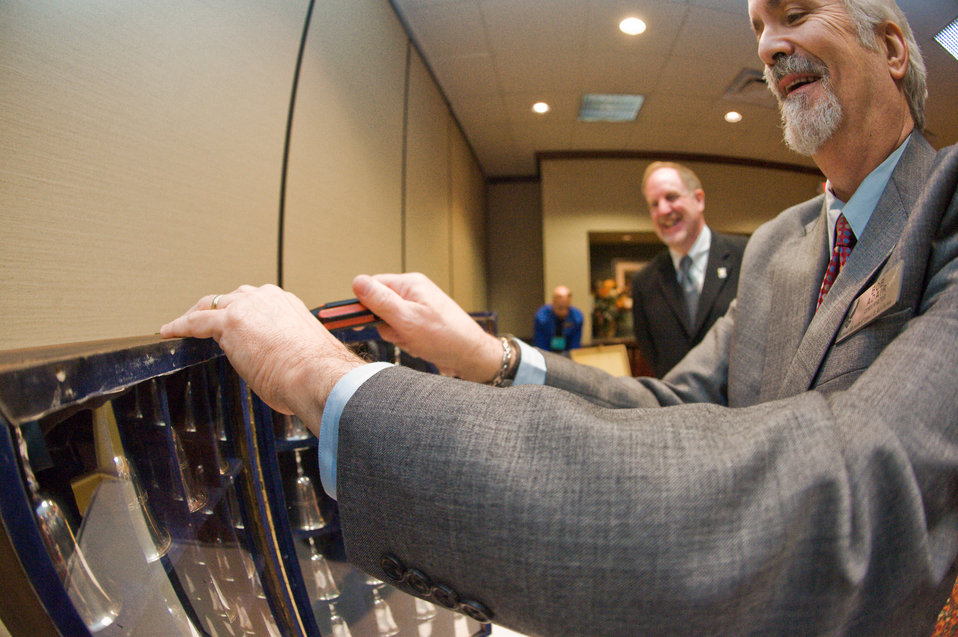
Doolittle Tokyo Raiders' Goblet Ceremony

Robert Adair (grey suit) and John Luchin (black suit), carefully replace the clear display panels of the Doolittle Raiders' case of goblets after being used in a ceremony in Fairborn, Ohio on April 6, 2010. Adair is a conservator and Luchin is a collections registrar with the National Museum of the U.S. Air Force who keeps, care and transports the goblets for the Doolittle Raiders. The rarley seen goblets were last opened for a ceremony in 2008.